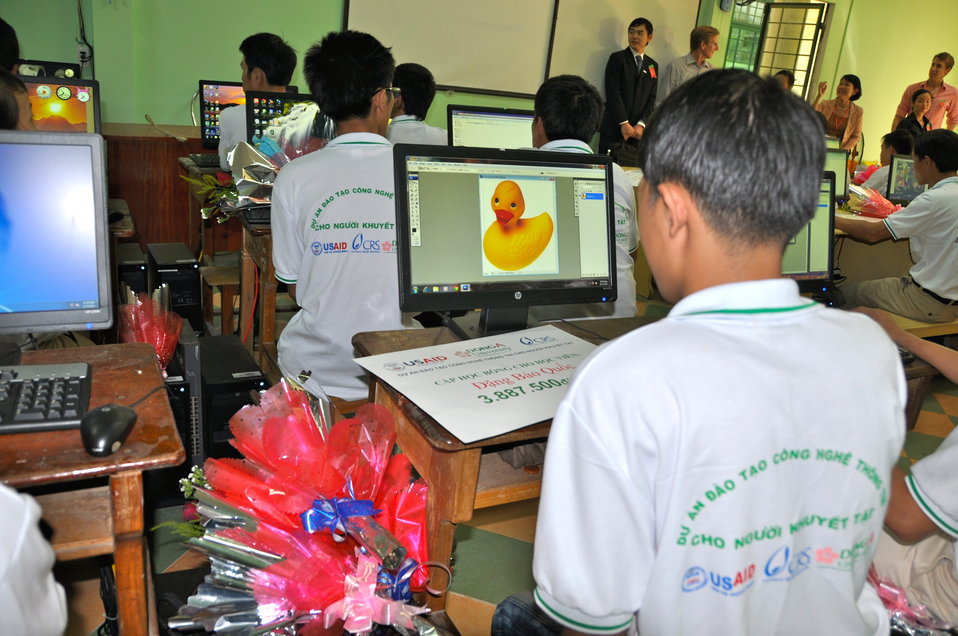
New class of students starts at Dong A Univeristiy with support from USAID and CRS

Photo: @USAIDVietnam
December 3, 2012